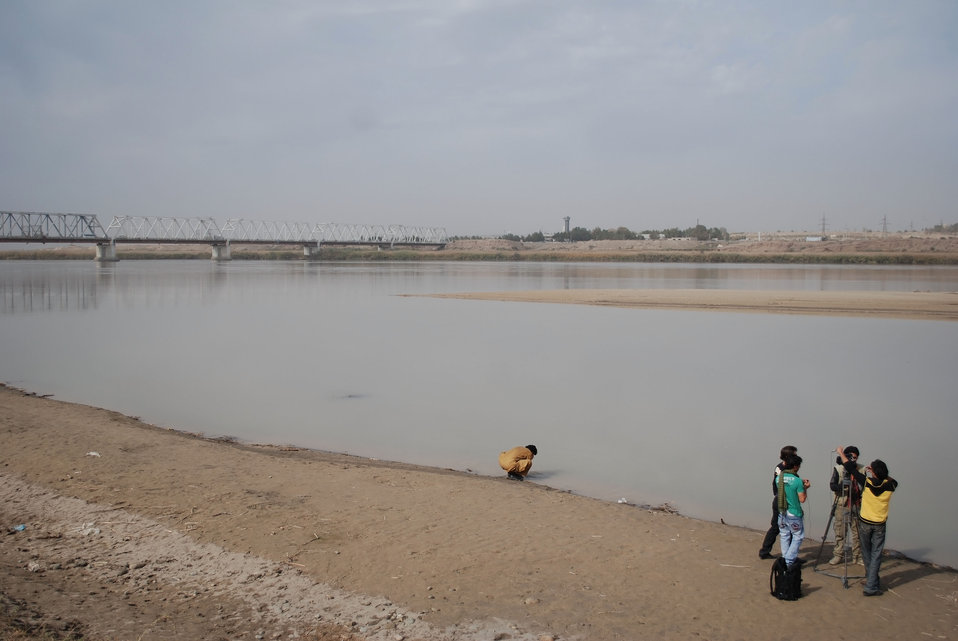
'On the Road' in Balkh Province